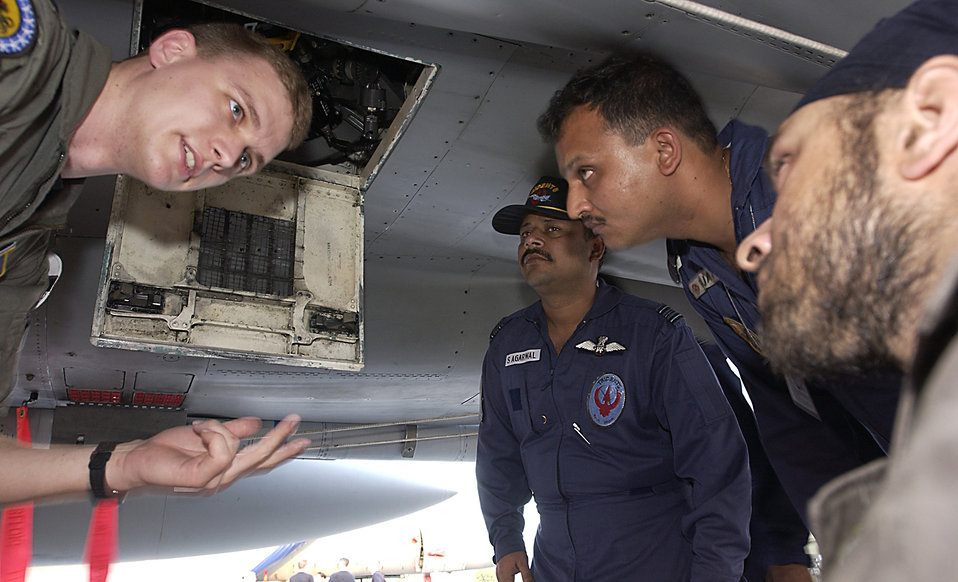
Cope India '04

GWALIOR AIR FORCE STATION, India -- Capt. David Skalicky gives a tour of an F-15 Eagle to Indian air force officers here after the day's flying for Cope India '04, a bilateral fighter exercise between Indian and U.S. air forces. Captain Skalicky is a pilot from Elmendorf Air Force Base, Alaska.